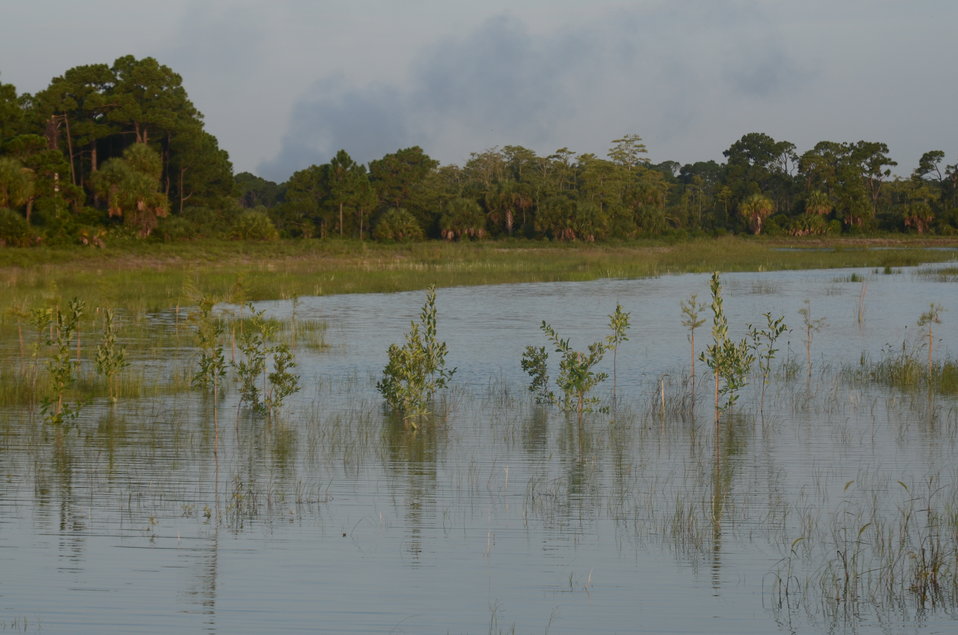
Agriculture Secretary Tom Vilsack today announced $100 million in financial assistance to acquire permanent easements from eligible landowners in four counties and assist with wetland restoration on nearly 24,000 acres of agricultural land in the Northern Everglades Watershed, FL, on Thursday, August 8, 2011.